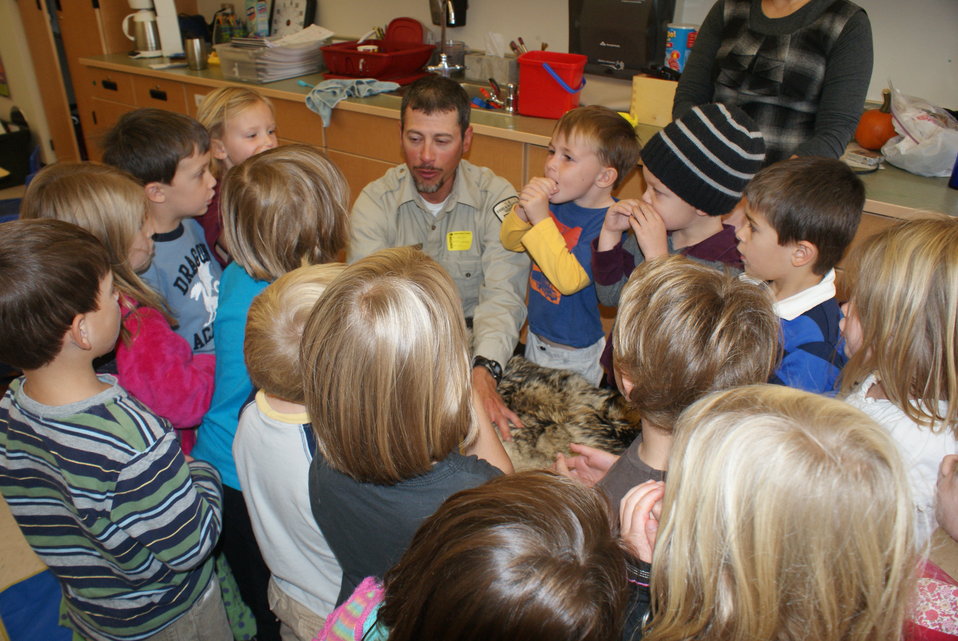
Scientists in the Community Program

U.S. Fish and Wildlife Service Mountain-Prairie Region Deputy ARD for External Affairs, Matt Kales, introduces early childhood education students at William Roberts Elementary School in Denver to some of Colorado's native and historic wildlife species.